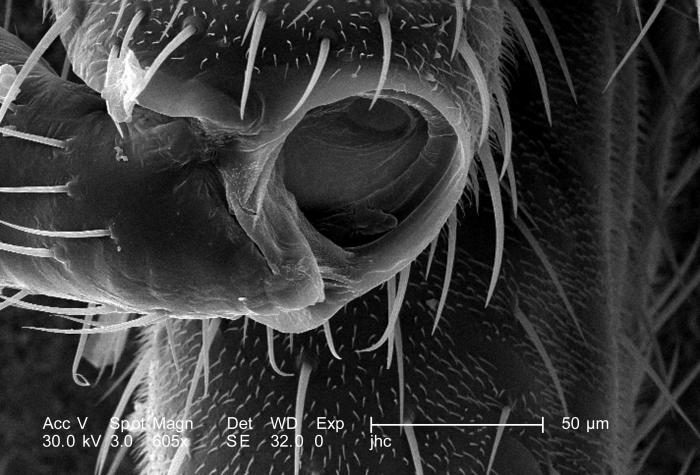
Magnified 605X, this scanning electron micrograph (SEM) depicted some of the morphologic details found at one of the leg joints of what was an unidentified 1/4"-sized black flying insect with a small red mark on its dorsum, discovered in the suburbs of Decatur, Georgia. As a member of the Phylum Arthropoda, i.e., Arthro = 'jointed', and poda 'leg', this insect sported three pairs of jointed legs, which placed it into the Family, Insecta>. Note that PHIL 9913, 9914 and 9915 depict this region under varying magnifications.